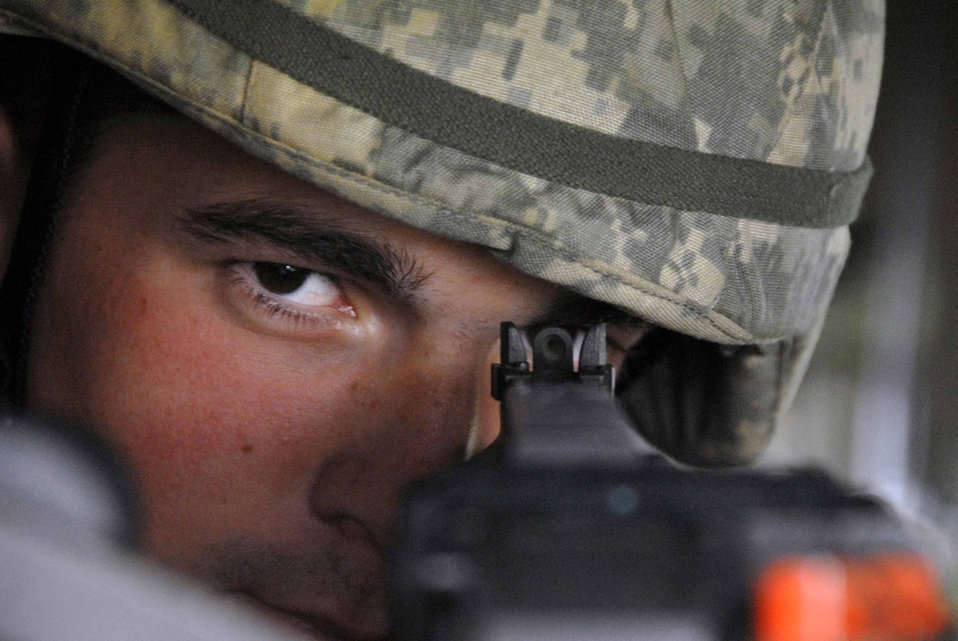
Osan exercise tests Airmen

Airman 1st Class David Armes aims his M240B General Purpose Machine Gun during a base-wide exercise July 21 at Osan Air Base, South Korea. Airman Armes is an entry controller assigned to the 51st Security Forces Squadron.